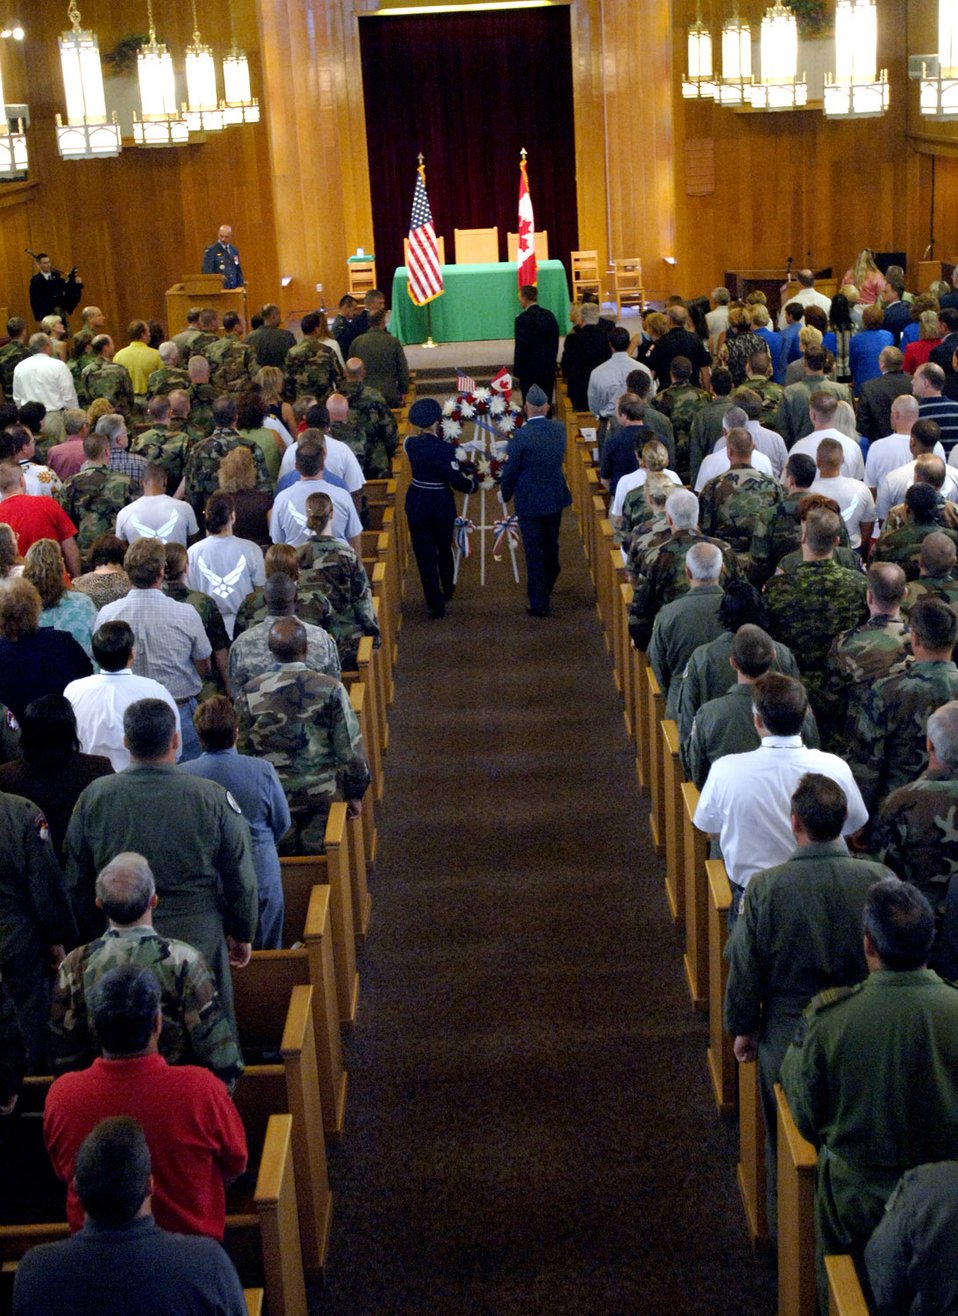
Tyndall ceremony honors 9/11 heroes, victims

More than four hundred military and civilian personnel attended a special remembrance ceremony Sept. 11 at the Tyndall Air Force Base, Fla., chapel to commemorate the victims and heroes of the 9/11 attacks.